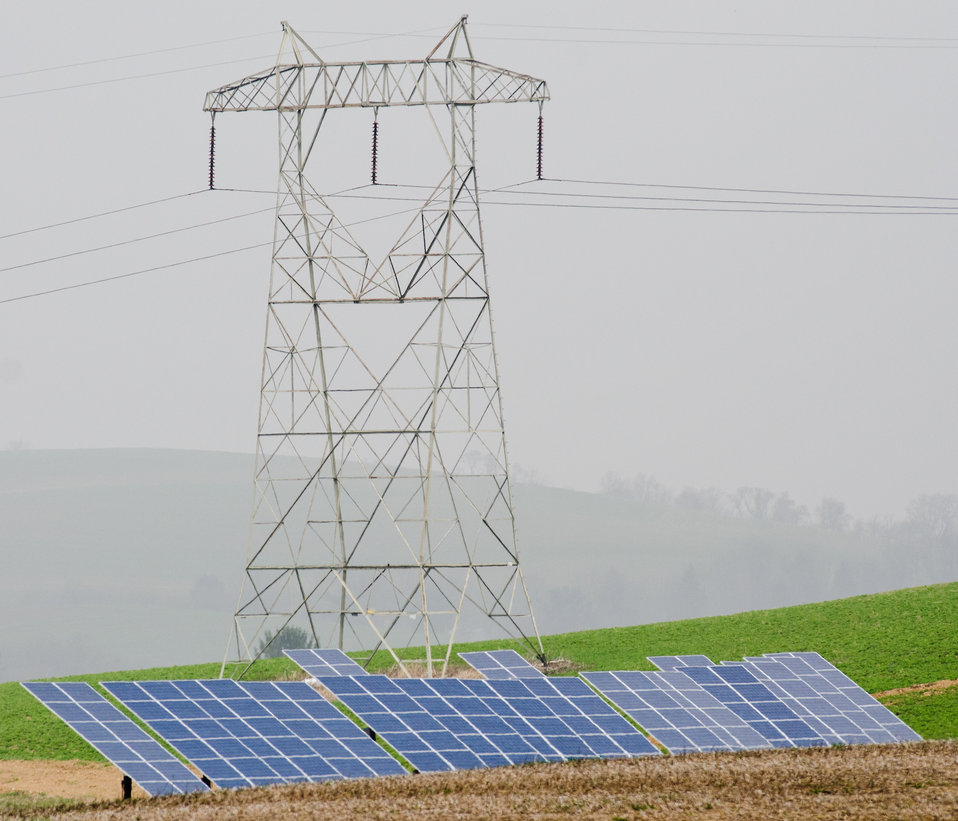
Heidel Hollow Farms has been a family owned farm since 1852 and is currently an 1,800 acre operation in Germansville, PA. Led by David Fink, President of Heidel Hollow Farms, they mainly produce and compact hay for export and grow produce on 300 acres for local sale. With the financial help of the U.S. Department of Agriculture (USDA) an 896 panel solar array was recently installed on non farmable diversion ditches. Rated at 200 kilowatts, they project 240 megawatts of electricity to be produced each year, providing up to 70% of the farms electrical needs. Electrical energy is sent into the local power grid for credit and draw power from the grid with preexisting connections. Photograph was taken on Wednesday, April 20, 2011.